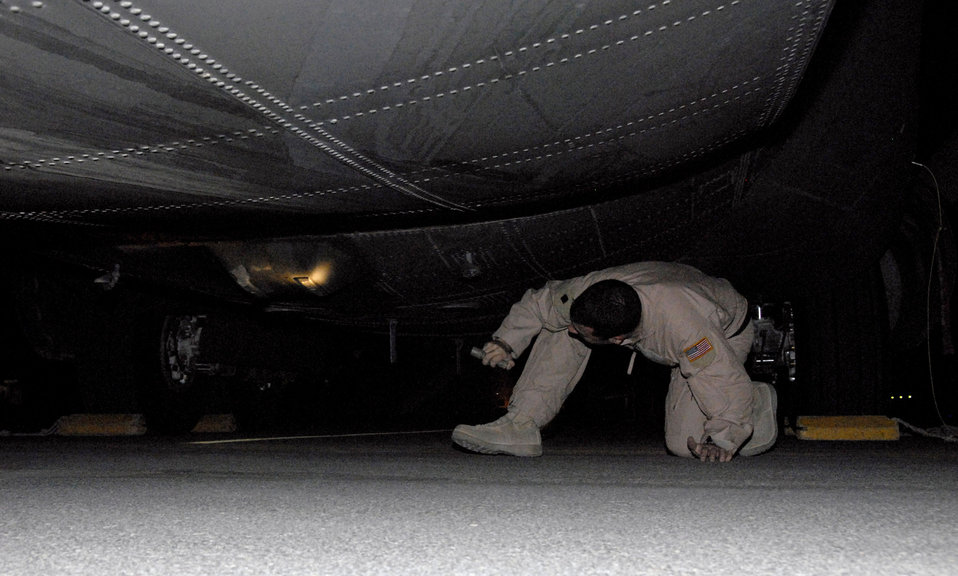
Airmen airdrop messages to Iraqi citizens

Staff Sgt. James Rice performs a preflight inspection of a C-130 Hercules at an air base in Southwest Asia prior to a leaflet airdrop mission over Iraq. Sergeant Rice is a C-130 engineer deployed with the 737th Expeditionary Airlift Squadron deployed from Dyess Air Force Base, Texas.